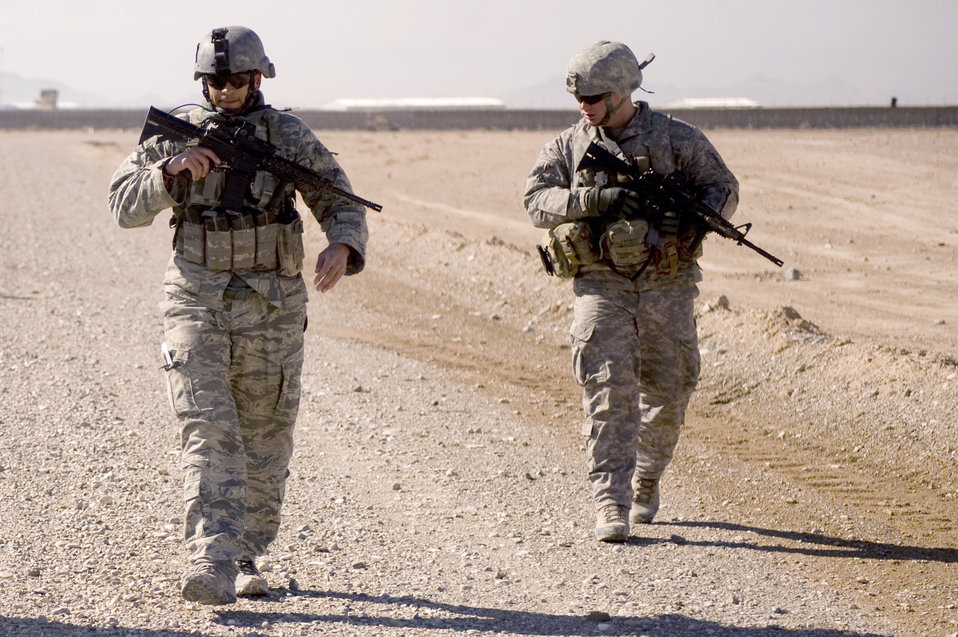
Landing zone safety officers trained at austere location

Senior Airman Jesse Medrano and Staff Sgt. Brandon Craig conduct a foreign object debris walk and inspection of a dirt landing zone in the Zabul Province of Afghanistan near FOB Lagman as part of the hands on portion of a Landing Zone Safety Officer class. The class consisted of U.S. Air Force, Army, and Romanian army members who were there to be certified to safely run the dirt landing and drop zone. The class was taught by U.S. Air Force instructors from Combined Joint Task Force 101, Headquarters Air Mobility Liaison Office. Airman Medrano is a joint terminal air controller with the 807th Expeditionary Air Support Operations Squadron at Forward Operating Base Lagman, Afghanistan. He is deployed from the 10th Air Support Operations Squadron at Ft. Riley, Kan. Sergeant Craig is deployed from the 2nd Air Support Operations Squadron at Vilseck, Germany.